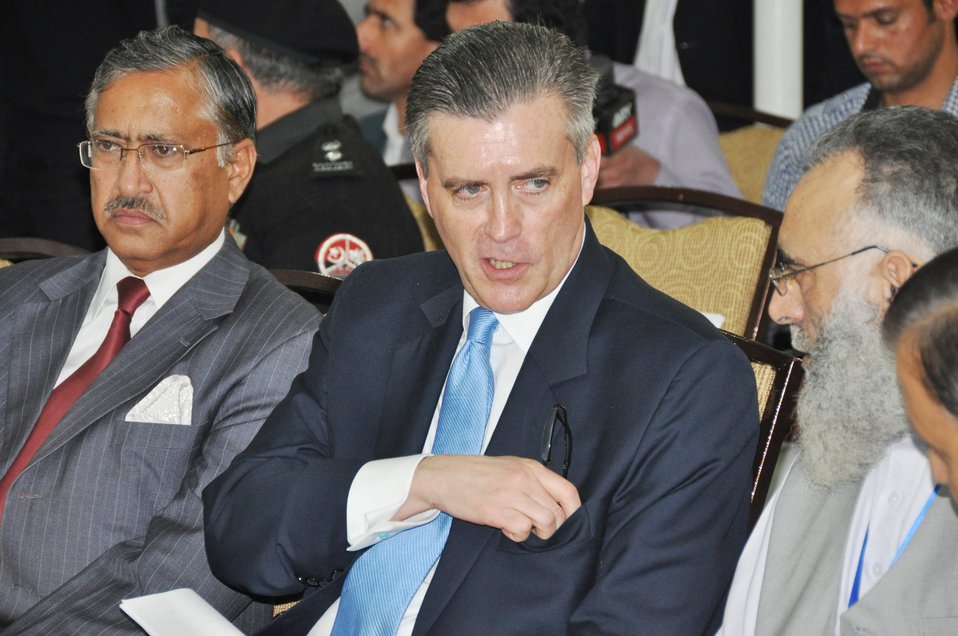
The United States Ambassador to Pakistan, Richard Olson broke ground for a U.S. funded construction of a new Faculty of Education building in Muzaffarabad, AJK. 02